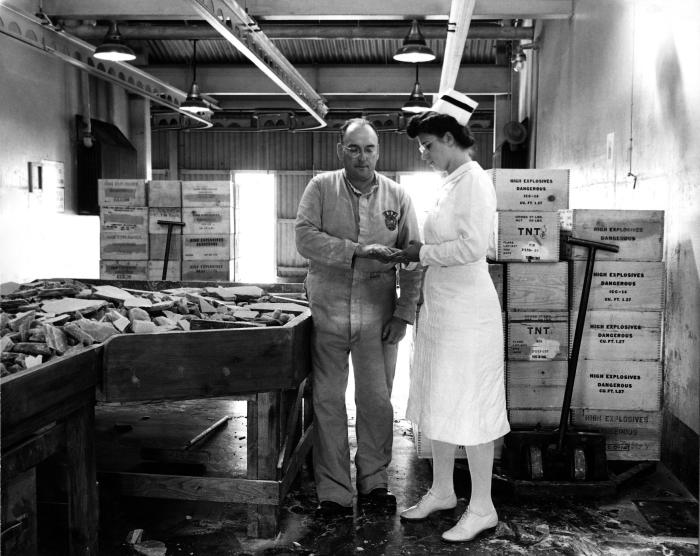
Provided by the Center for Disease Control's (CDC), National Institute for Occupational Safety and Health (NIOSH), this historic 1943 image depicted an inhouse nurse examining the hands of a military TNT (trinitrotoluene) ordnance plant employee for signs of TNT contamination. A poisonous chemical, TNT will irritate the skin upon contact, and actually will change the skin's color to a bright yellow-orange. Prolonged exposure leads to liver damage, anemia, enlargement of the spleen, and a compromised immune system, to name a few of its negative effects. Trinitrotoluene is also a known carcinogen. Note that this man was not wearing a filtered breathing mask, or gloves, which would have protected him from accidentally airborne particulates, or spills.